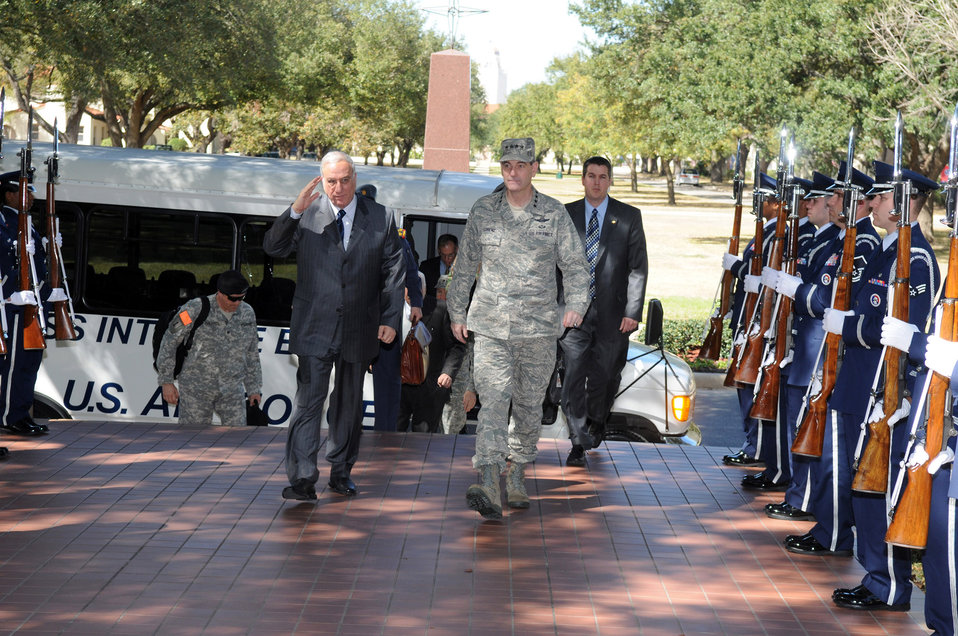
Iraqi Minister of Defense discusses military, political landscape

Iraqi Minister of Defense Abdul Qader Mohammad Jassim Al-Mafrji and Gen. Stephen R. Lorenz, Air Education and Training Command commander, pass by an Air Force honor guard formation at Randolph Air Force Base, Texas., Feb.18.